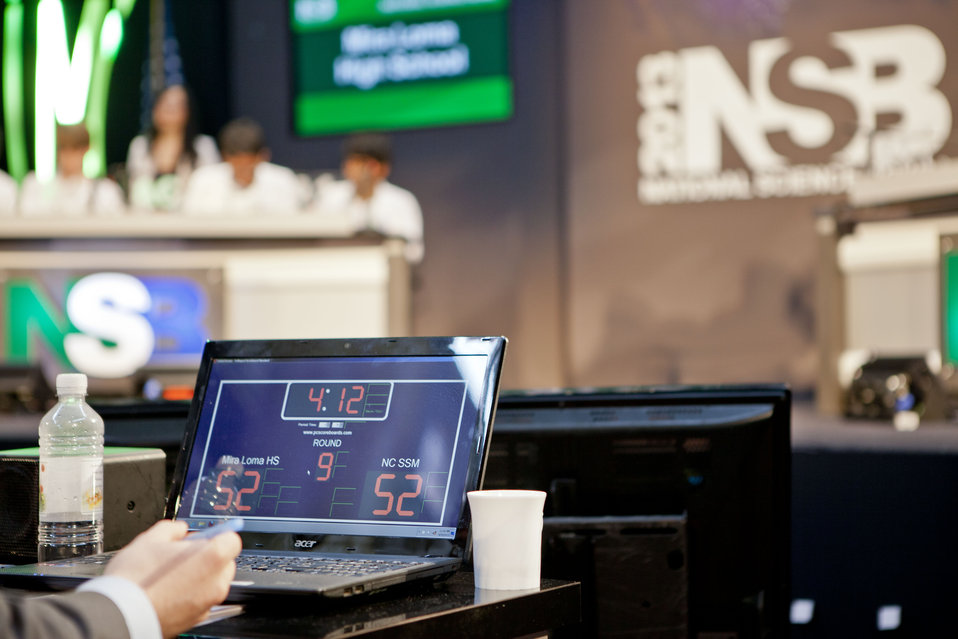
National Science Bowl 2013

The final round between Mira Loma High School and North Carolina School of Science and Mathematics was neck and neck until the very end, when Mira Loma launched ahead to take first place.